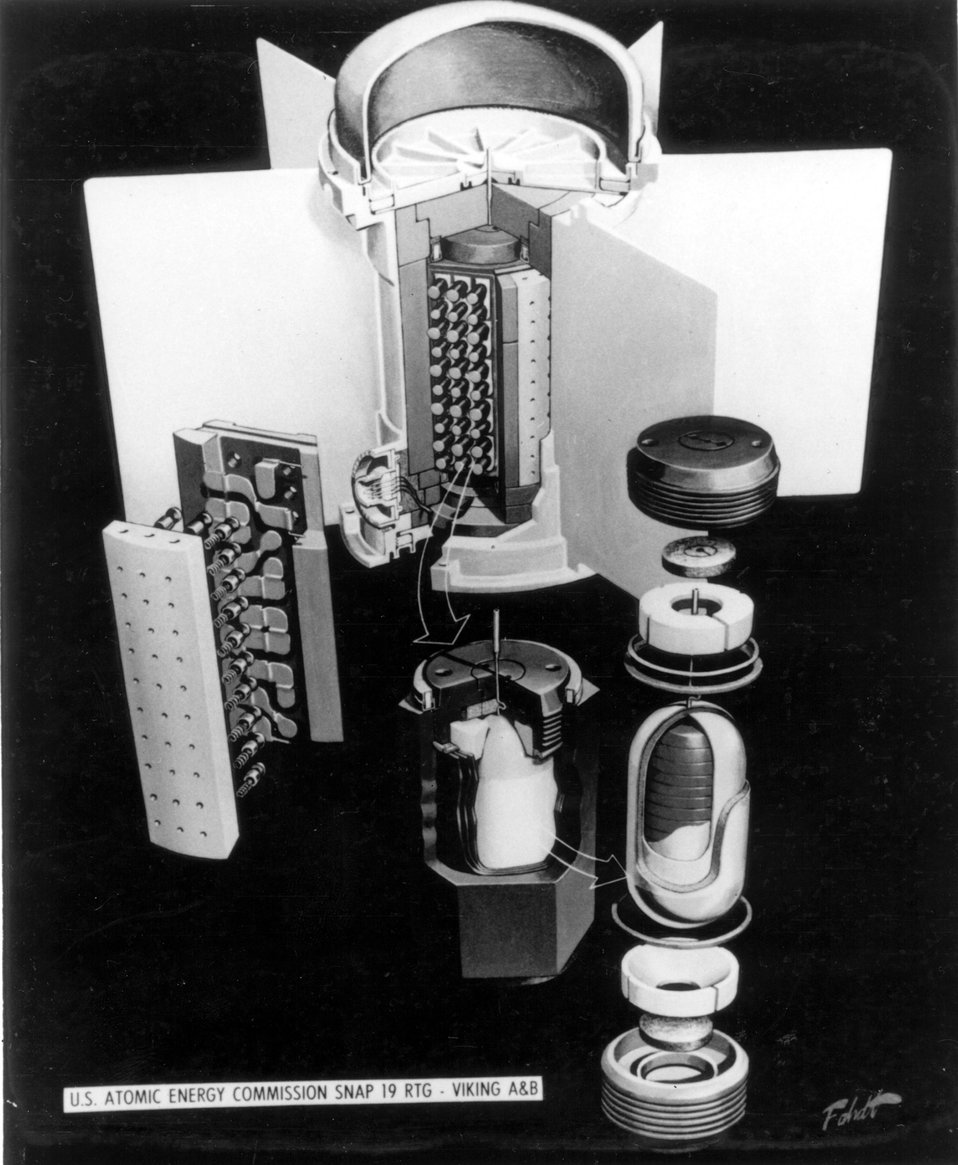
SNAP-19... Exploded view of the Modified SNAP-19 radioisotope thermometric generator.